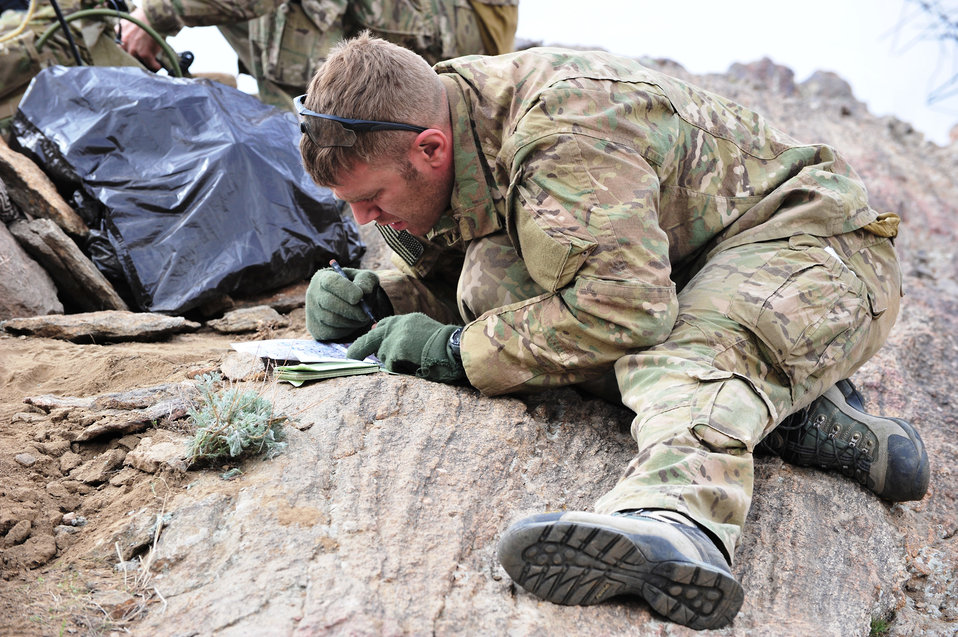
JTACs

Tech. Sgt. Jonathan Oliver reviews the operation plan and maps upon a remote mountaintop March 28, 2011, during Operation Bull Whip in Laghman province, Afghanistan. Sergeant Oliver is a joint terminal attack controller assigned to Bagram Airfield's 817th Expeditionary Air Support Operations Squadron.